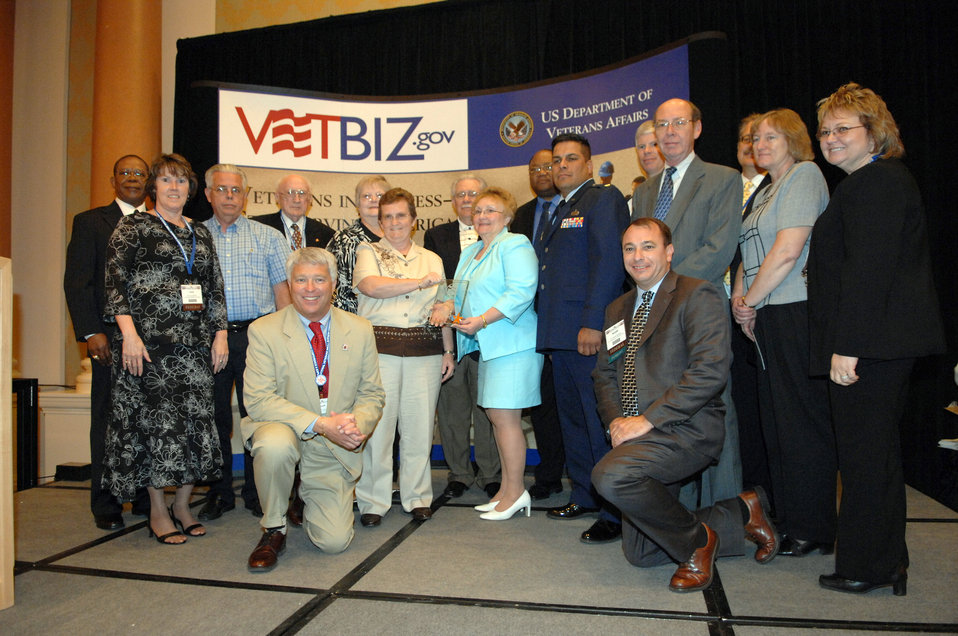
Air Force recognized for awarding veterans contracts

Representatives of various Air Force bases come together during the 6th Annual Awards Program June 27 at Caesars Palace in Las Vegas. The Department of Veterans Affairs recognized 23 Air Force bases for achievement under the Champions of Veteran Enterprise program.